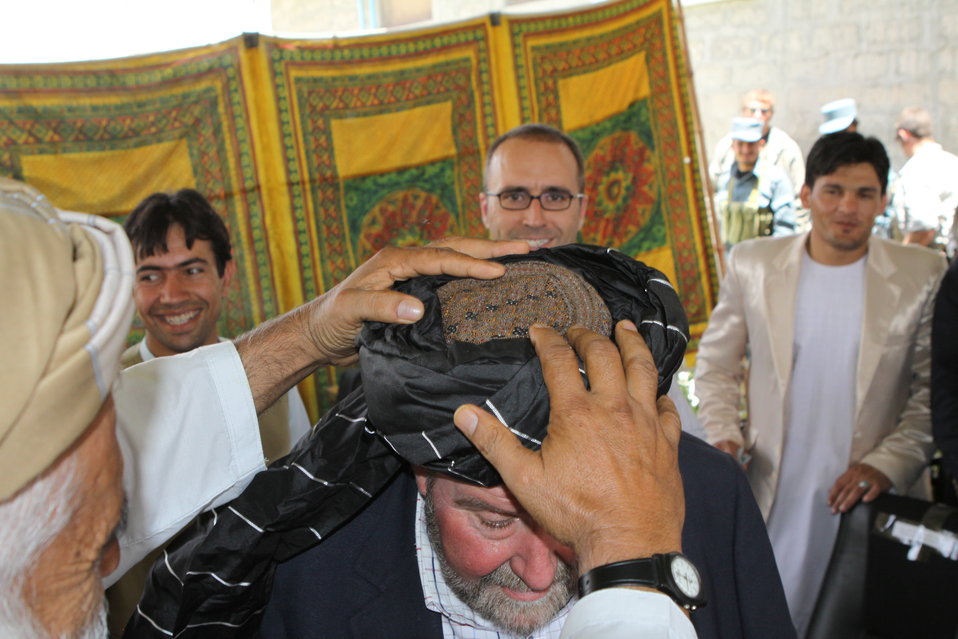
Bolan Poultry Farm